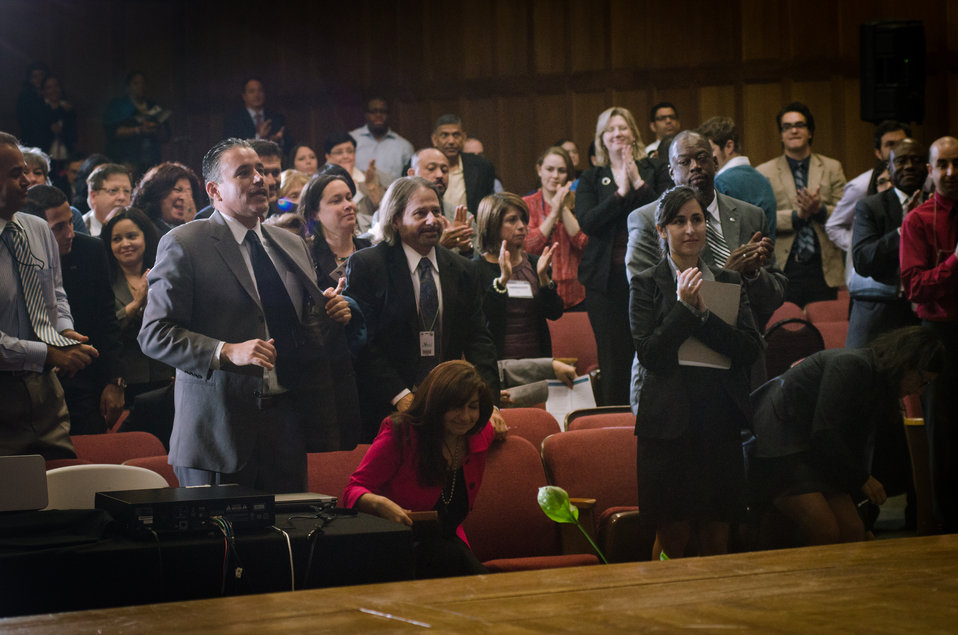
A standing ovation for the Keynote Speaker Poet Richard Blanco (on stage), during the 2013 National Hispanic Heritage Month ”Hispanics: Serving and Leading our Nation with Pride and Honor,” on Thursday, Sept. 19, 2013, in the Jefferson Auditorium, USDA Headquarters, Washington, D.C. Mr. Blanco stands as the youngest, first Latino, and first openly gay person to serve as the Presidential inaugural poet, on January 21 of this year.